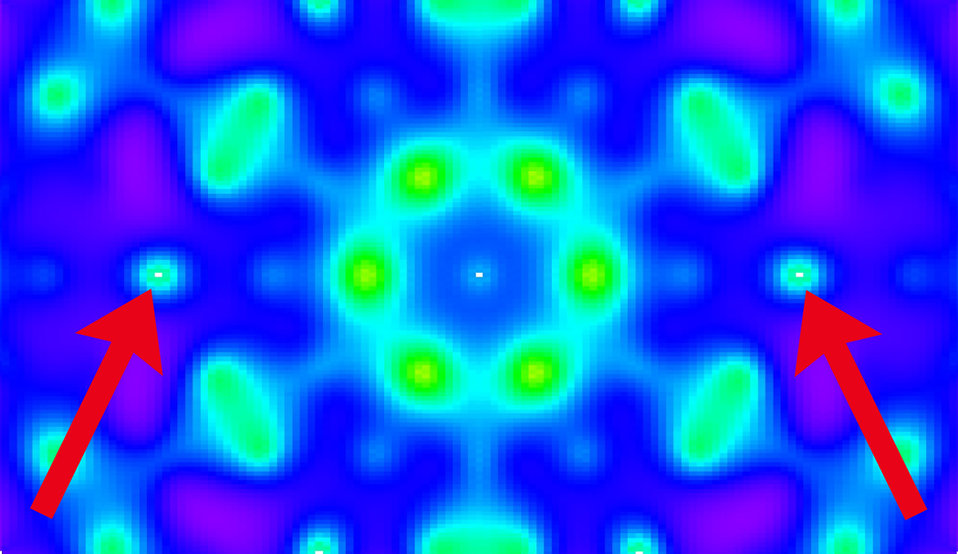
Magnetic Monopoles